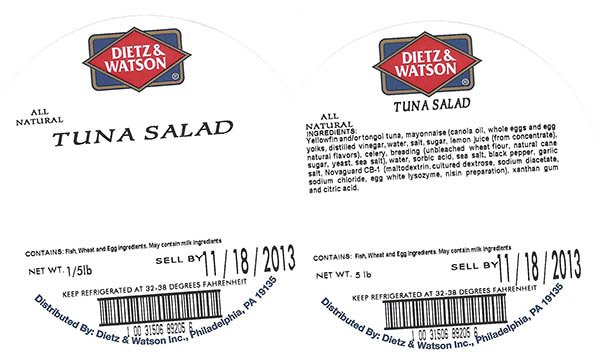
RECALLED – Prepared salads

October 24, 2013 – Product Recall – Boston Salads and Prepared Foods Recalling Ready-To-Eat Products Because of Possible Health Risk.